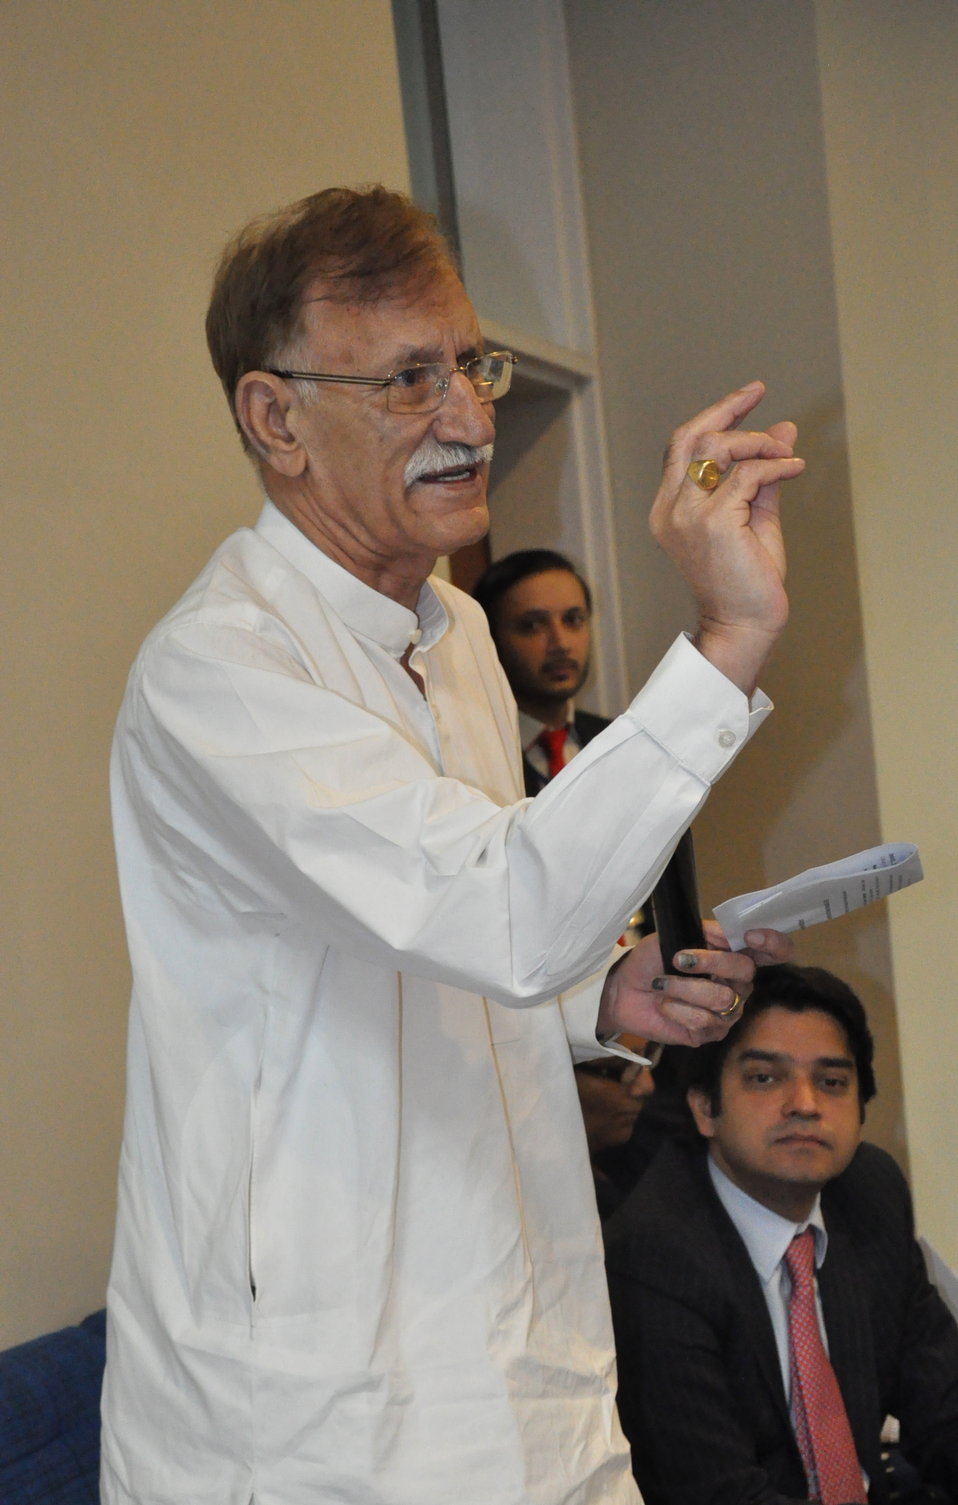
Chairman Punjab Education Foundation Raja Anwar during the QandA session